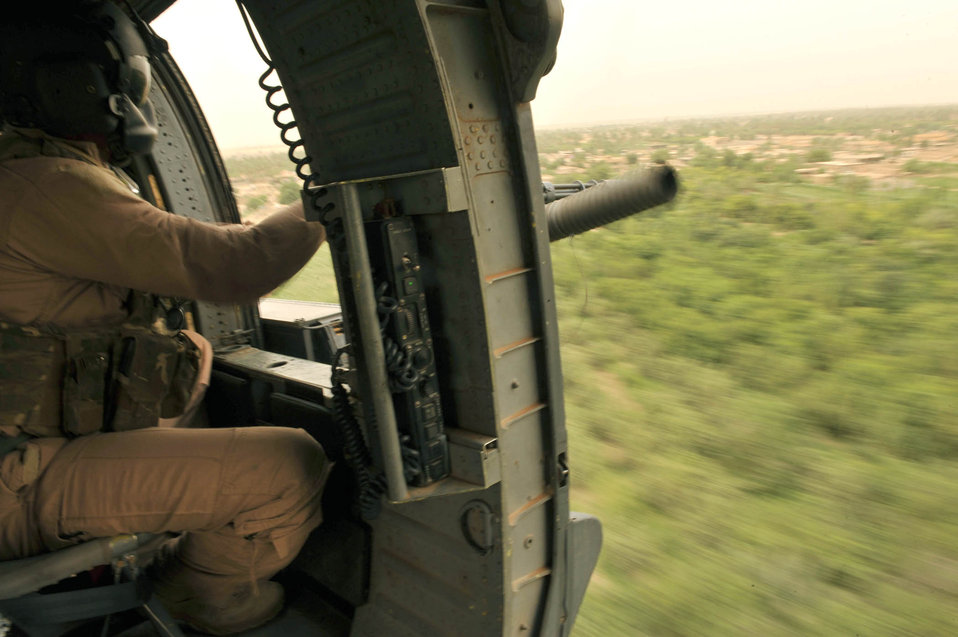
Personnel recovery team lives up to motto

Staff Sgt. Dave Lamica, scans the Iraqi sky from the back of an HH-60G Pave Hawk during a training flight May 15, 2010, near Joint Base Balad, Iraq. Sergeant Lamica is a flight engineer assigned to the 64th Expeditionary Rescue Squadron.